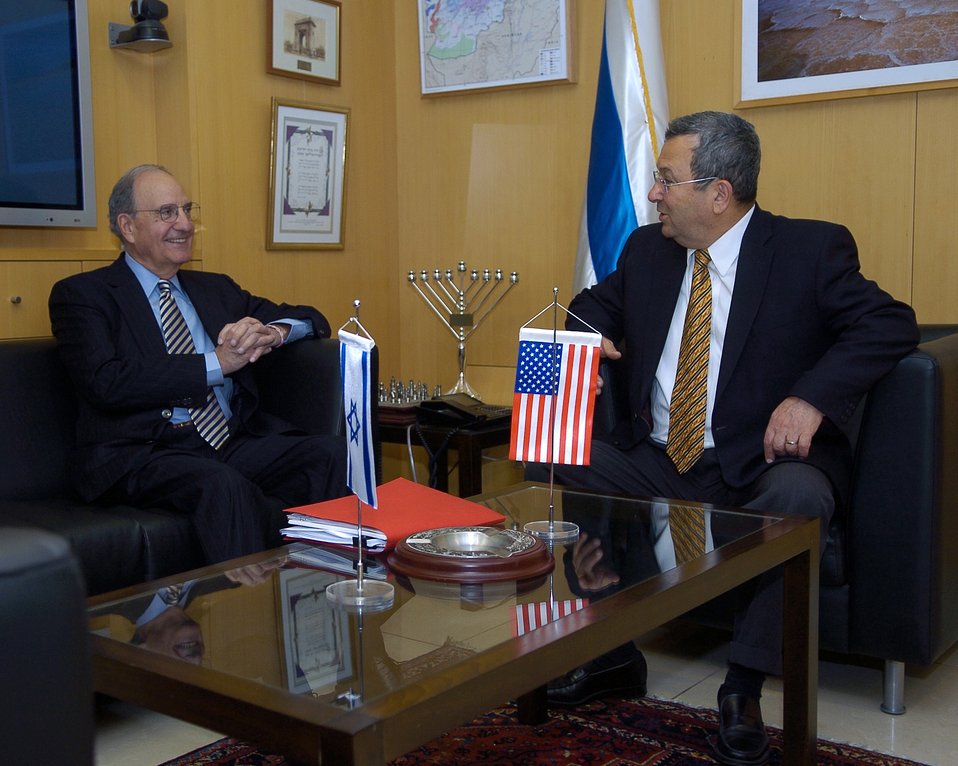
Israeli Defense Minister Ehud Barak and Special Envoy George Mitchell

Israeli Defense Minister Ehud Barak meets with Special Envoy for Middle East Peace George Mitchell at Hakirya, Tel Aviv, Israel, April 23, 2010.